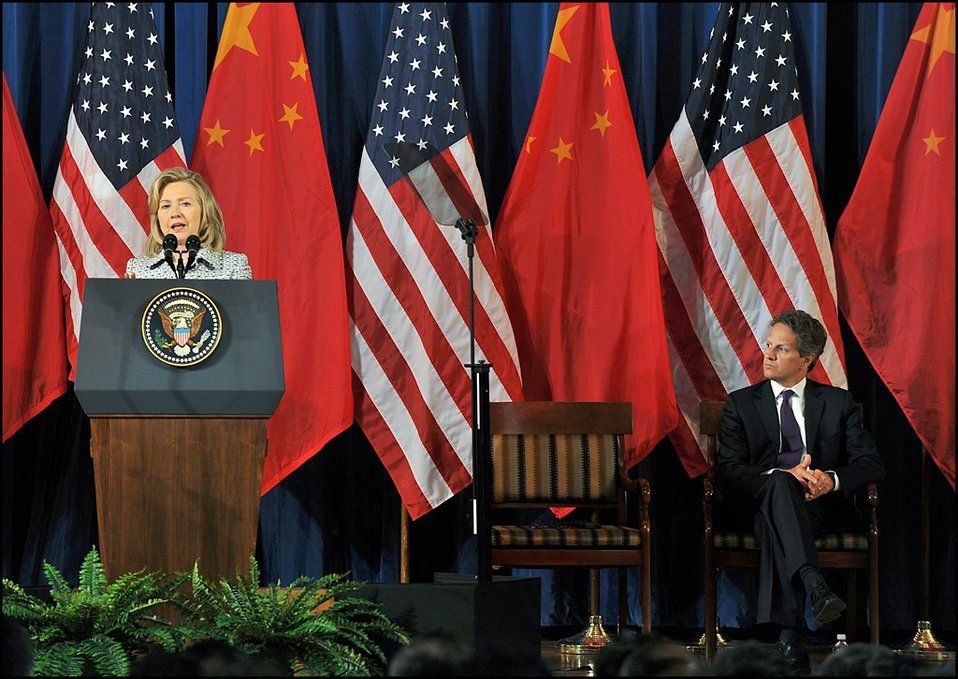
U.S.-China Strategic and Economic Dialogue

Treasury Secretary Tim Geithner watches as Secretary of State Hillary Clinton speaks at the opening session of the third U.S.-China Strategic and Economic Dialogue held in Washington, DC on May 9th and 10th.